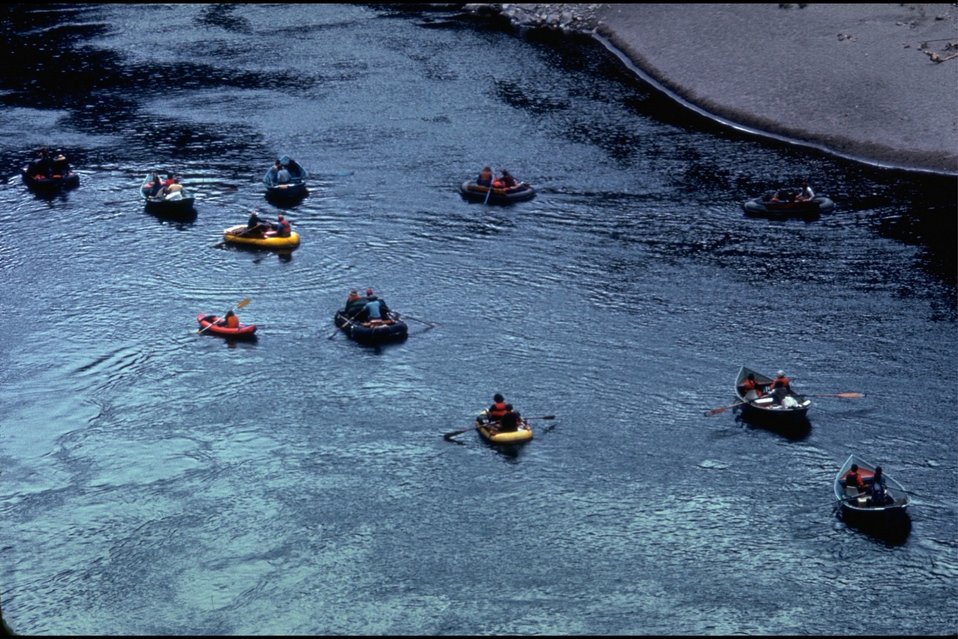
Rogue River - mix of boat types.